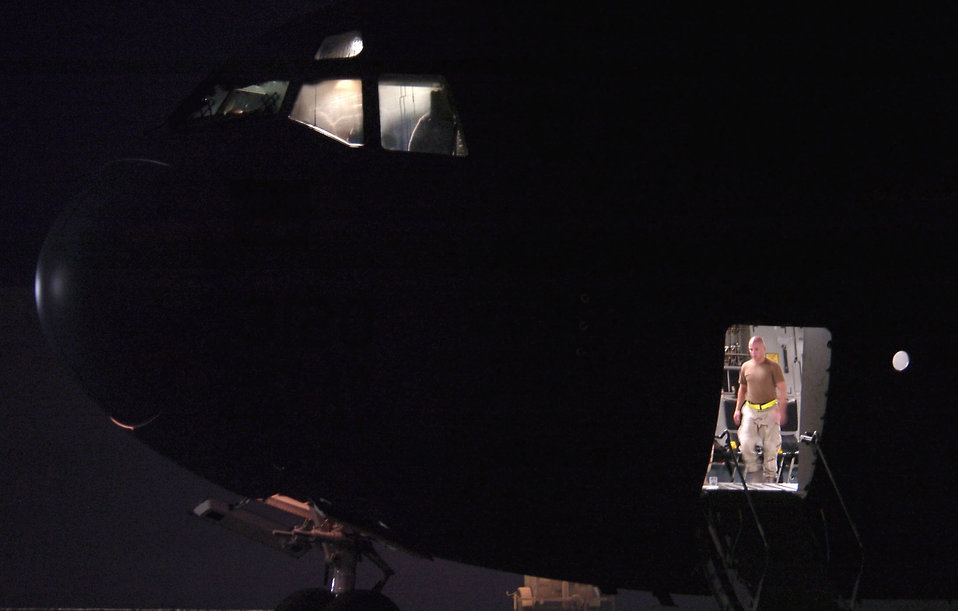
Globemaster operations

An aircraft maintenance Airman prepares a C-17 Globemaster III from the 816th Expeditionary Airlift Squadron for an early-morning takeoff. The 816th EAS flew more than 1,200 sorties in July, delivering cargo and troops in support of operations Iraqi Freedom and Enduring Freedom.